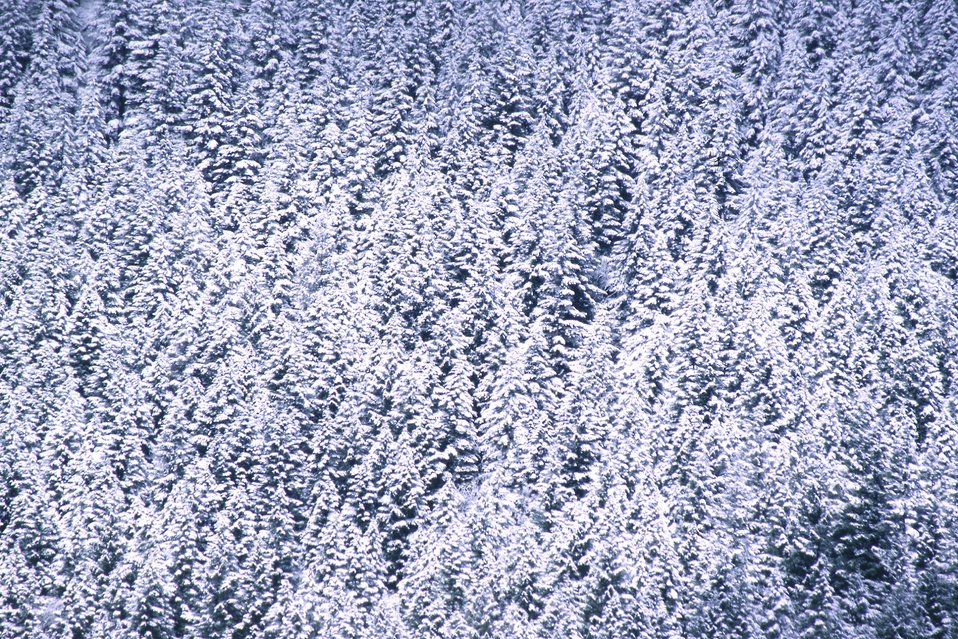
Mid Winter forest scene in the Mollala Corridor.